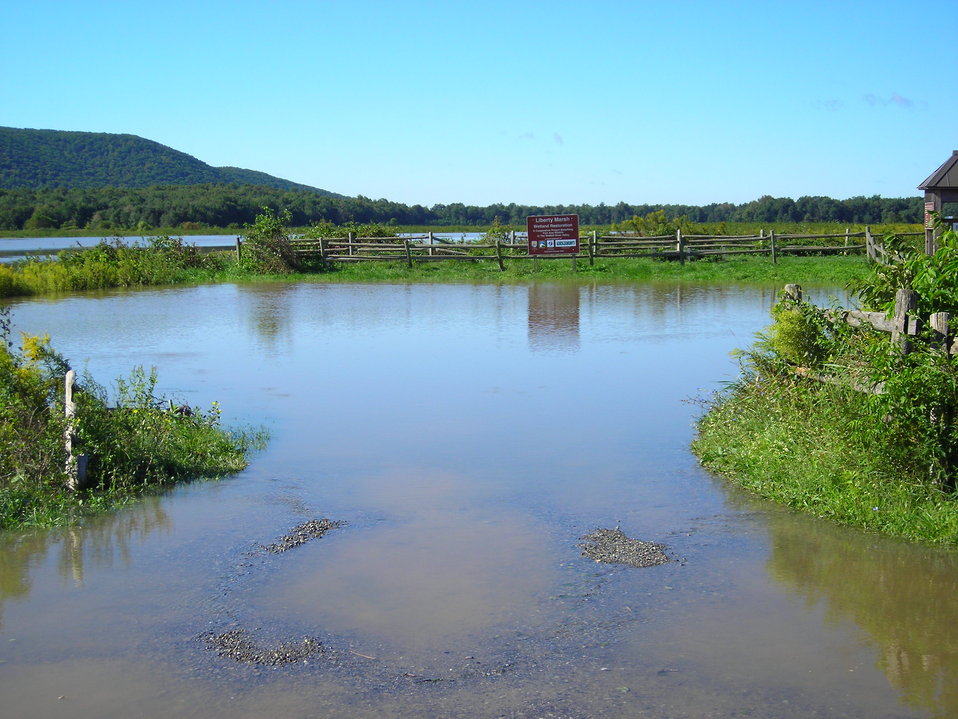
Flooding at WallKill River Refuge

Wallkill River National Wildlife Refuge, Sussex, N.J. Post-Irene flooded Liberty Loop impoundments and trail. Meagan Racey/USFWS